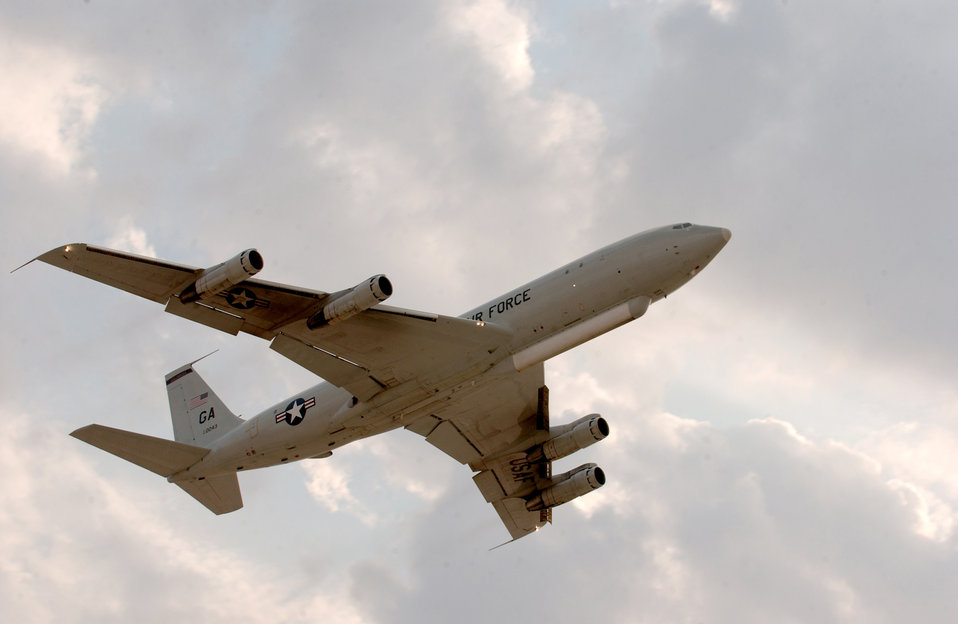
Joint STARS integration program

An Air Force E-8C Joint Surveillance Target Attack Radar System aircraft takes off for an intelligence, surveillance and reconnaissance mission. Engineers with Northrop Grumman Corp., and the 751st Electronic Systems Group at Hanscom Air Force Base, Mass., are working on a program to integrate a special sensor on E-8C aircraft that will provide aircrews with combat identification and reduce fratricide.